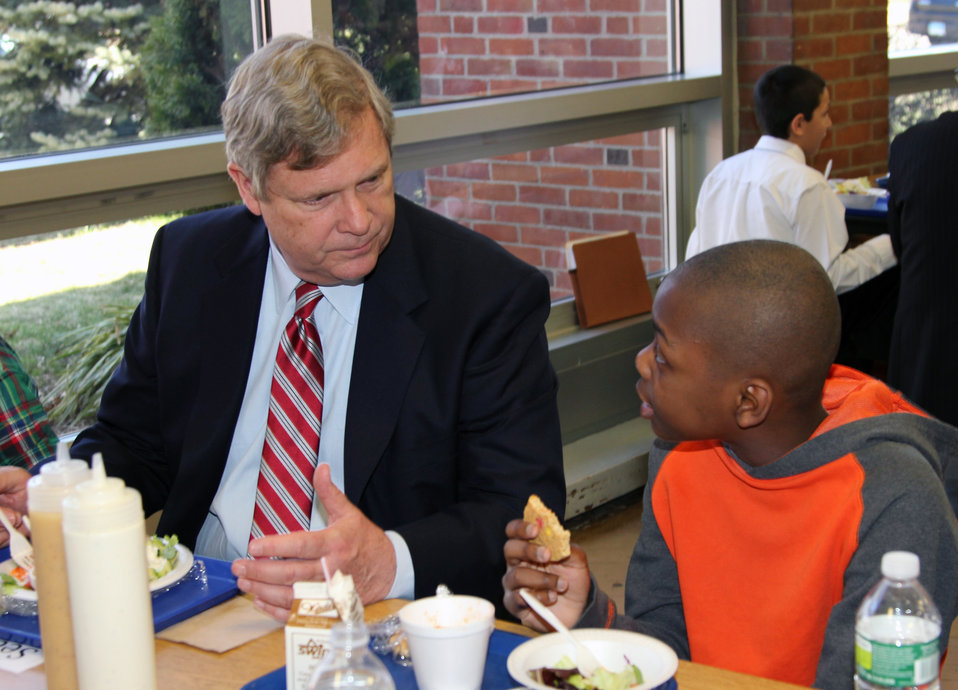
Agriculture Secretary Tom Vilsack shares lunch with students at Henry A. Wolcott Elementary School in West Hartford, Connecticut on Friday, April 5, 2013, during his visit to outline the U.S. Department of Agriculture (USDA) efforts to raise a healthier generation of Americans - April 5, 2013.